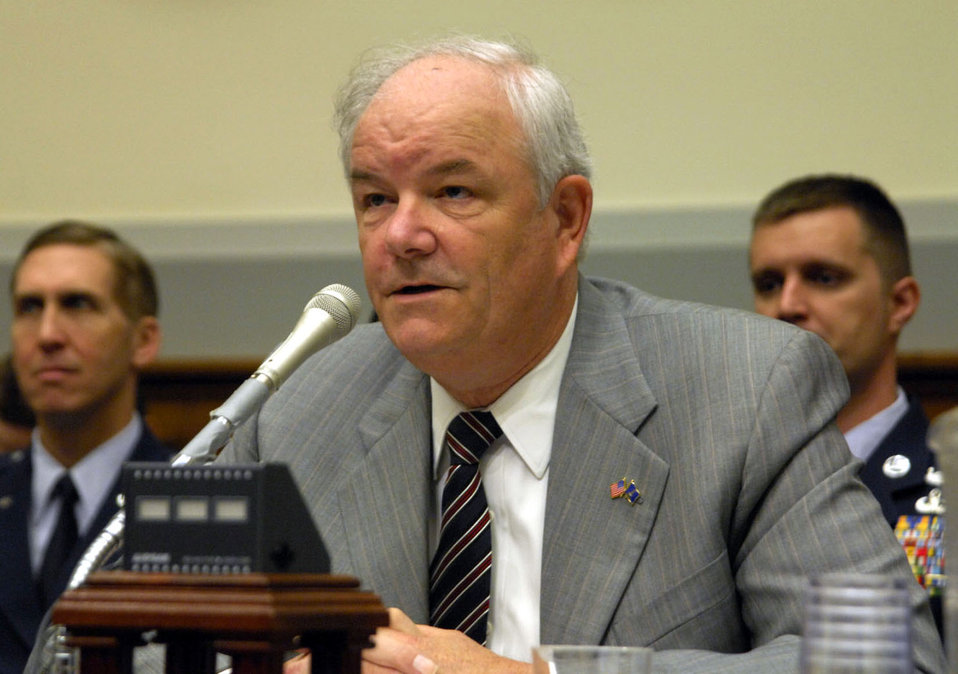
Air Force releases 2007 posture statement

Secretary of the Air Force Michael W. Wynne testifies before a House committee on Capitol Hill Feb. 28 about the need for more money to upgrade the Air Force's aging fleet of tanker aircraft.